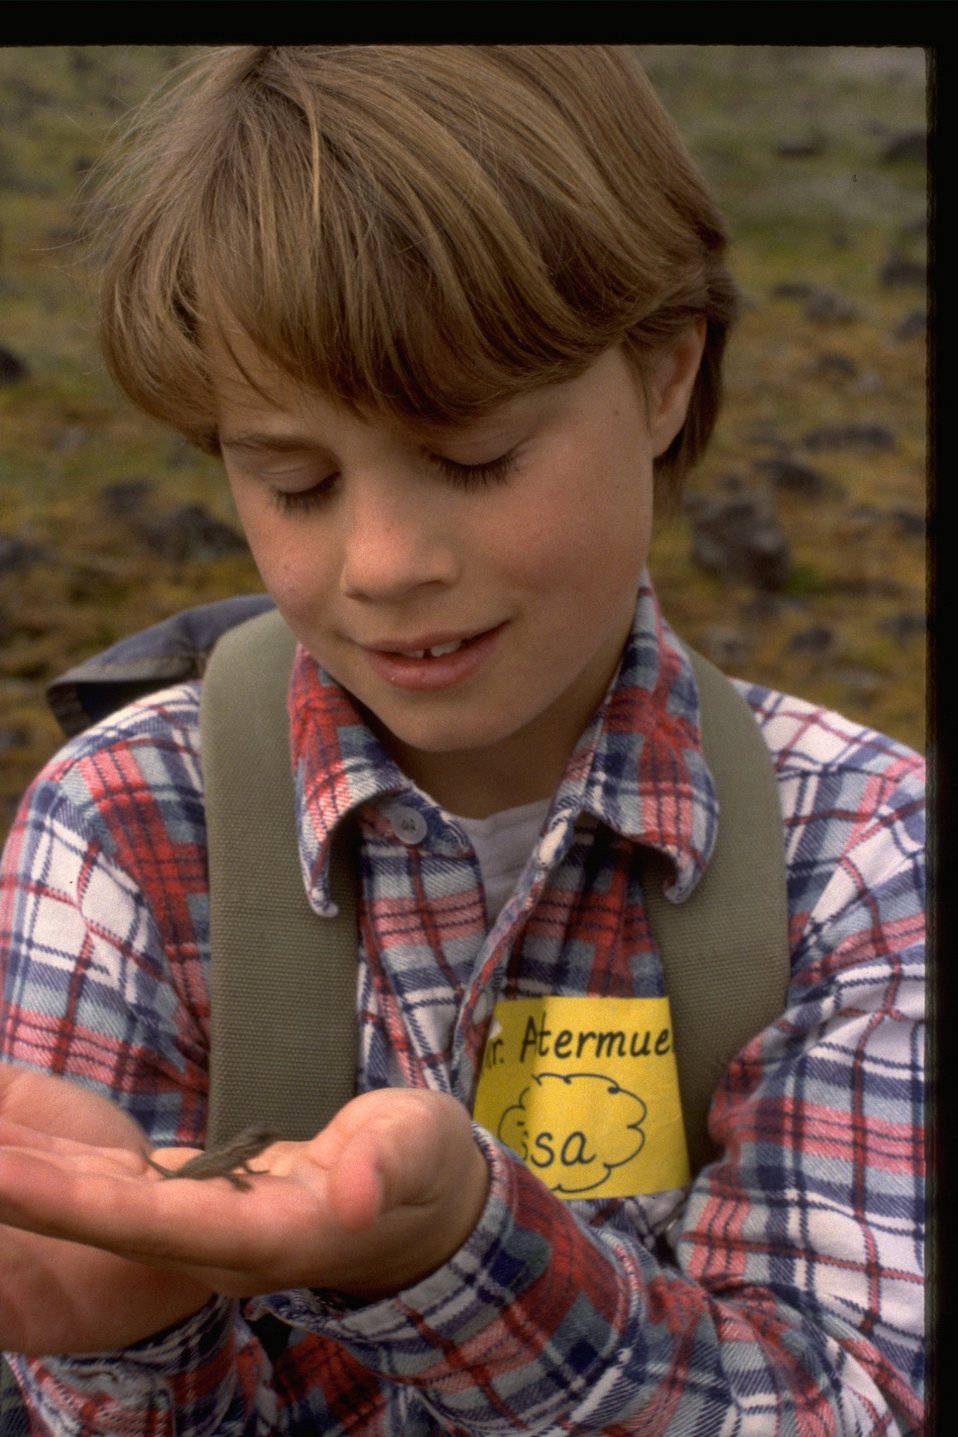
Child learns about environmental education at Table Rocks.